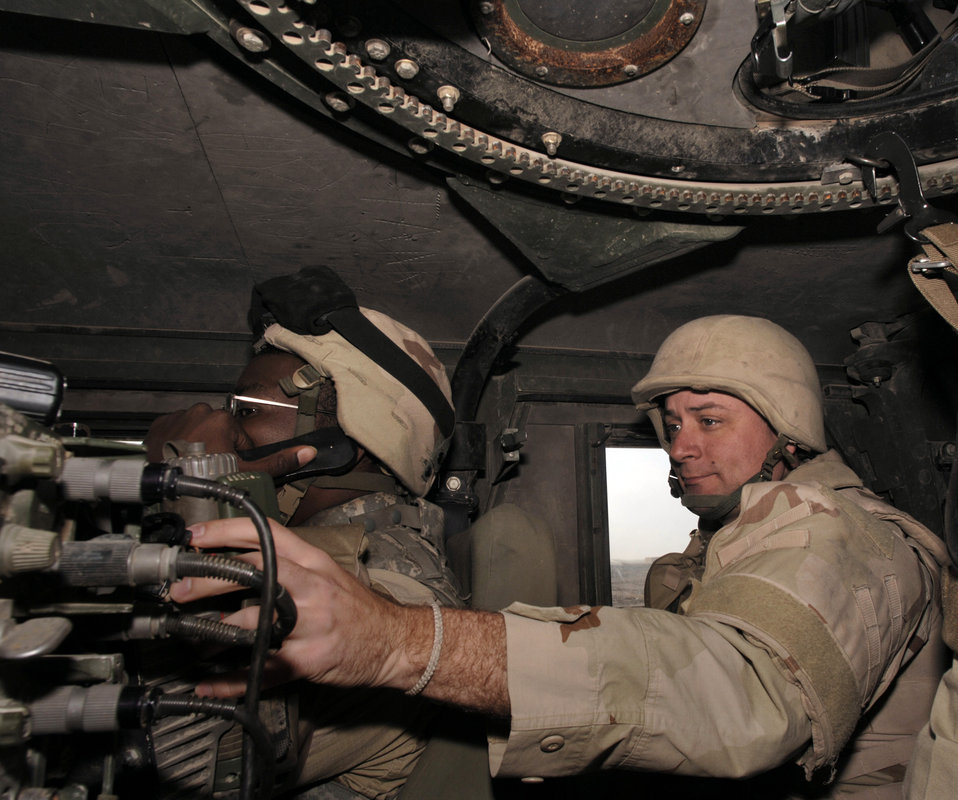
Convoy duty

IRAQ (AFPN) -- Tech. Sgt. Andrew Morin brings up position data on the Precision Lightweight GPS Receiver, a global positioning satellite device. He is with the 732nd Expeditionary Logistics Readiness Squadron participating in combat convoy security team missions. His team is returning convoy duty to the Army.